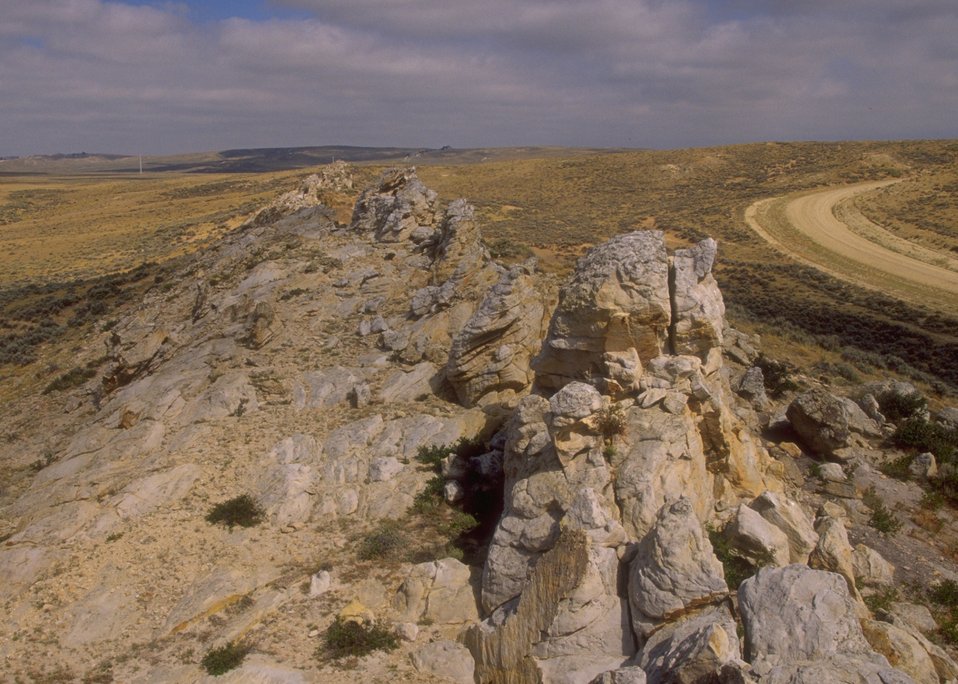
Rock Avenue area along the Oregon Trail, Casper Field Office.